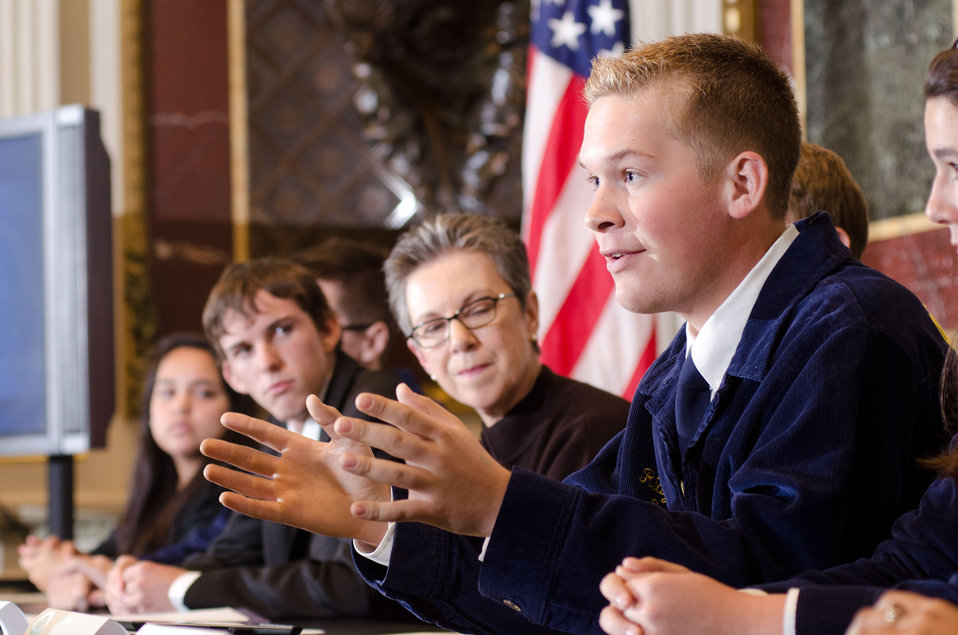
FFA State Secretary and Youth Champions of Change panelist Ridge Howell speaks during the Champions of Change Recognition event in the Indian Treaty Room of the Executive Office Building in Washington, D.C. on Tuesday, Oct. 9, 2012. The Champions of Change program was created to honor ordinary Americans doing great work in their communities. Each week, a different sector is highlighted and groups of Champions, ranging from educators, entrepreneurs and community leaders, are recognized for the work they are doing to serve and strengthen their communities. To the left of Howell is Agriculture Under Secretary for Research, Education and Economics Catherine Woteki.